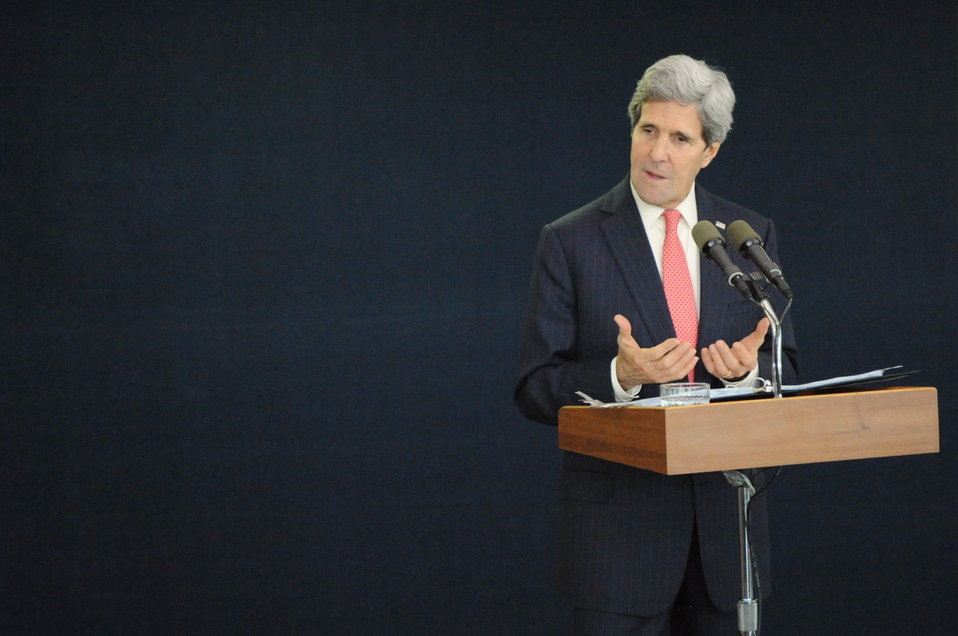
Secretary Kerry Addresses Reporters During Tel Aviv News Conference

U.S. Secretary of State John Kerry addresses reporters during a news conference in Tel Aviv after meetings in Israel with Prime Minister Benjamin Netanyahu on December 6, 2013.